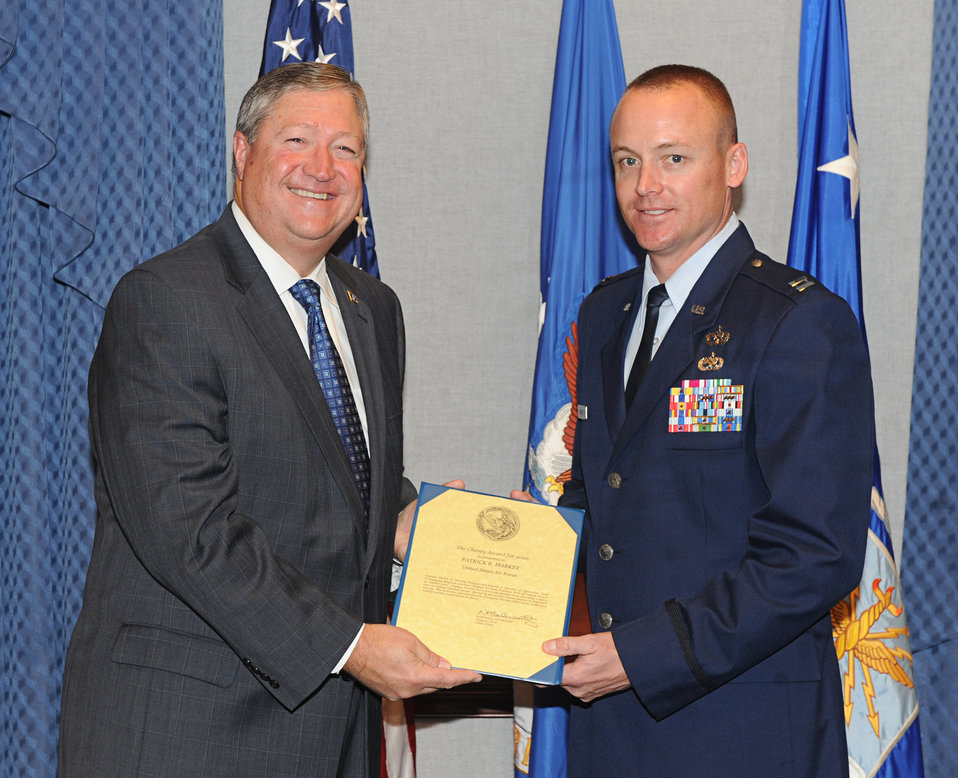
Cheney Award

Secretary of the Air Force Michael Donley presents the Lt. William
Cheney Award to Capt. Patrick R. Markey during a ceremony at the Pentagon
Oct. 27, 2011.